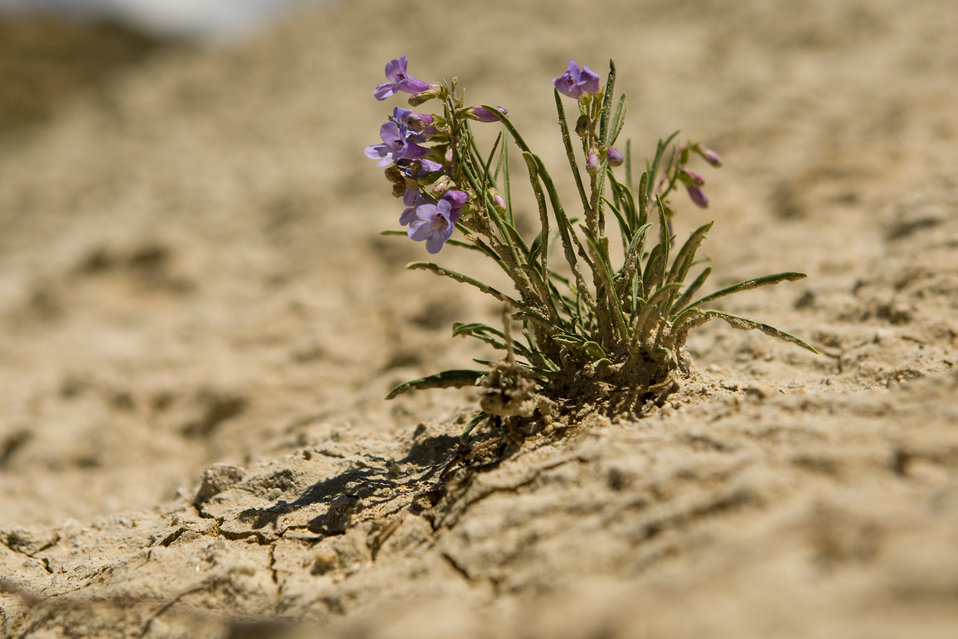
Colorado Rare Plant Conservation Initiative

The Colorado Rare Plant Conservation Initiative (RPCI) is a partnership of 23 statewide and regional agencies, private organizations, and academic institutions working to conserve 121 rare plants in Colorado. As part of these efforts the group developed the Colorado Rare Plant Conservation Strategy, developed Best Management Practices to reduce energy development impacts, addressed climate change, and developed focused strategies for the conservation of individual species at eight priority landscapes. The group has also worked to coordinate volunteer efforts for plant conservation across the state.